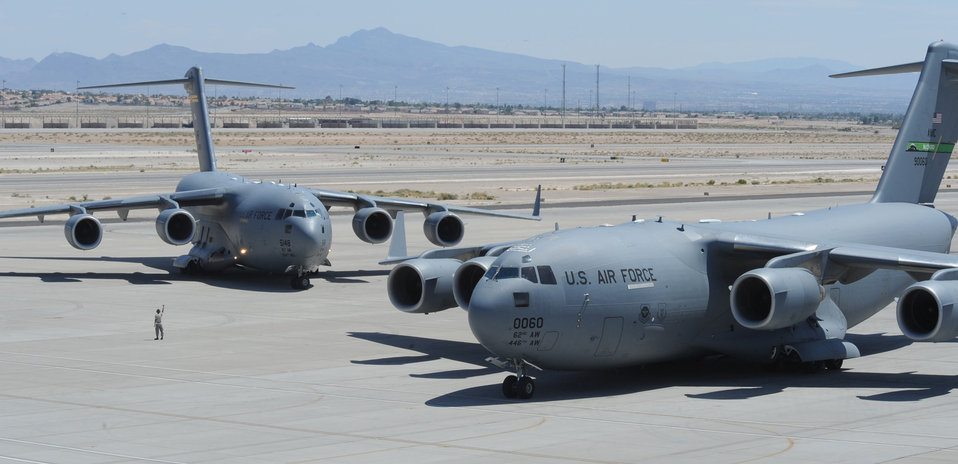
Testing mobility forces

Two C-17 Globemasters taxi in on the Nellis Air Force Base, Nev., flightline May 20 as part of the Mobility Air Forces Exercise. The 57th Weapons Squadron provides advanced tactical training to C-17 Globemaster aircrew selected to attend the United States Weapons School course here. The six month graduate-level course culminates in a massive airlift mission, called the Mobility Air Forces Exercise. More than 30 airlift assets and hundreds of support personnel from installations across the Air Force participate in the biannual training exercise.